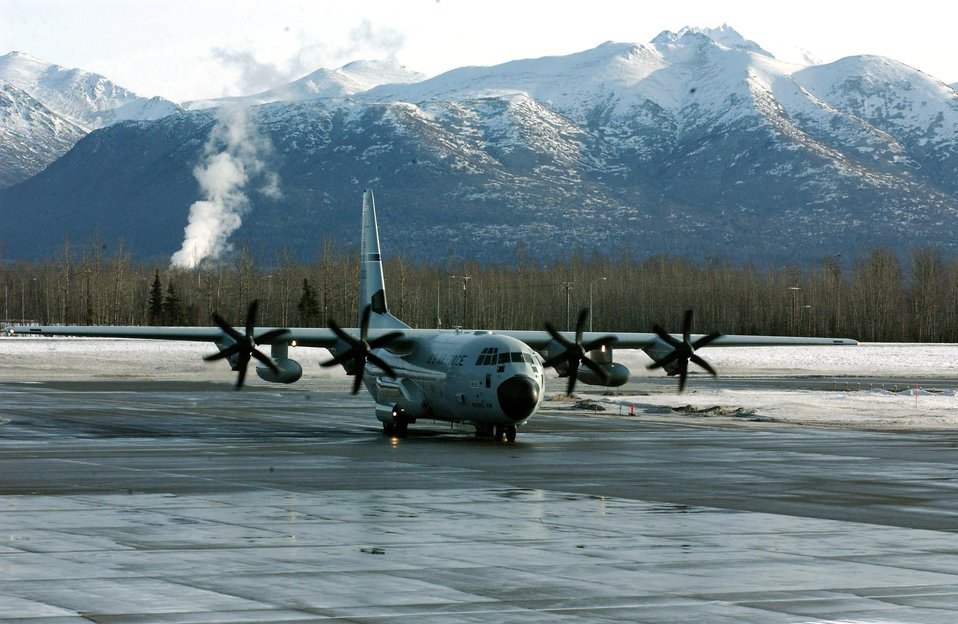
Hurricane Hunters take on winter storms

A WC-130J readies for takeoff at Elmendorf Air Force Base, Alaska. Reserve Hurricane Hunters of the 403rd Wing from Keesler AFB, Miss., deployed for a month to collect weather data ahead of pending winter storms. The data they collect increases the accuracy of the National Weather Service forecast by 10 to 20 percent.